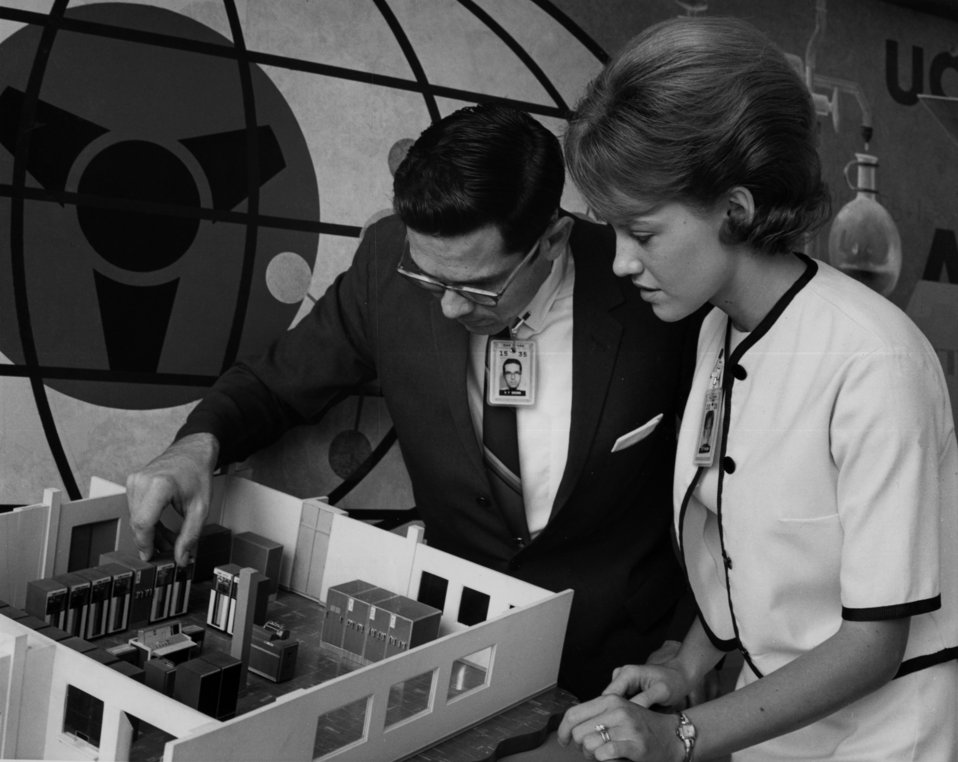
Working on layout of Oak Ridge Central Data Processing Facility

66-185-18 DOE photo Ed Westcott--Richard Brown BS University of Tennessee, 1960 ADP Program Analyst Oak Ridge Operations Office and Betty McCurry BS Tennessee Technological University 1965 work on layout of the Oak Ridge Central Data Processing Facility 1966